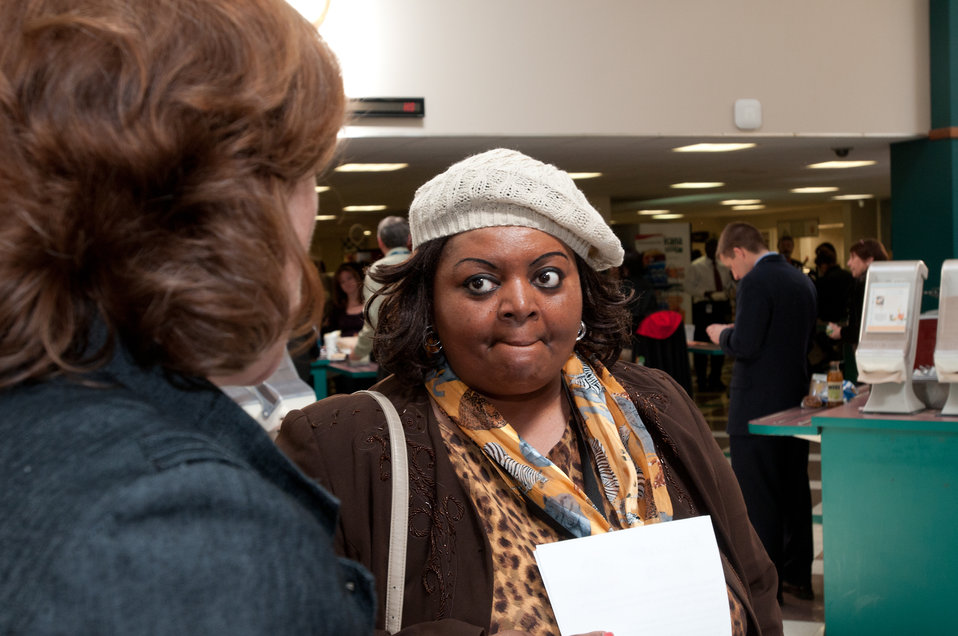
Teresa Holt (right) listened to Nutritionist Elaine McLaughlin (left) as she talks, about the benefits of walking, eating fruit, and drinking water; while chocolate and sugar were not beneficial, during a conversation at the Department of Agriculture's celebration of the Dietary Guidelines for Americans 2010, an informational event in the Whitten Café in Washington, D.C., on Wednesday, March 2, 2011. Ms. Holt said her goal was to fit her bathing suit on July 4th, 2011.